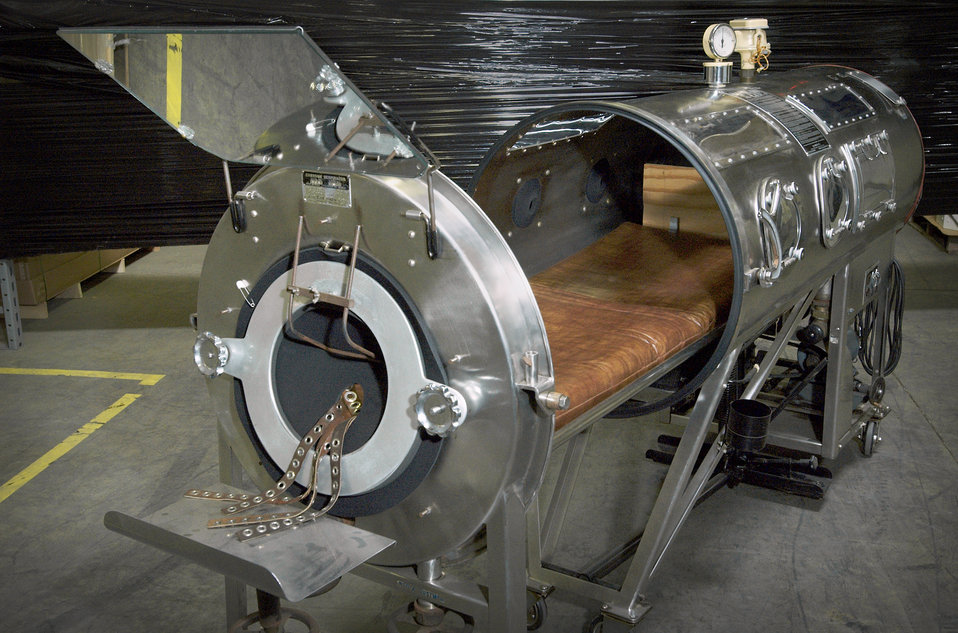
This photograph shows an opened artificial respirator commonly known as the iron lung. Polio patients of the 1950s depended on these devices to breath after being paralyzed with this devastating virus.